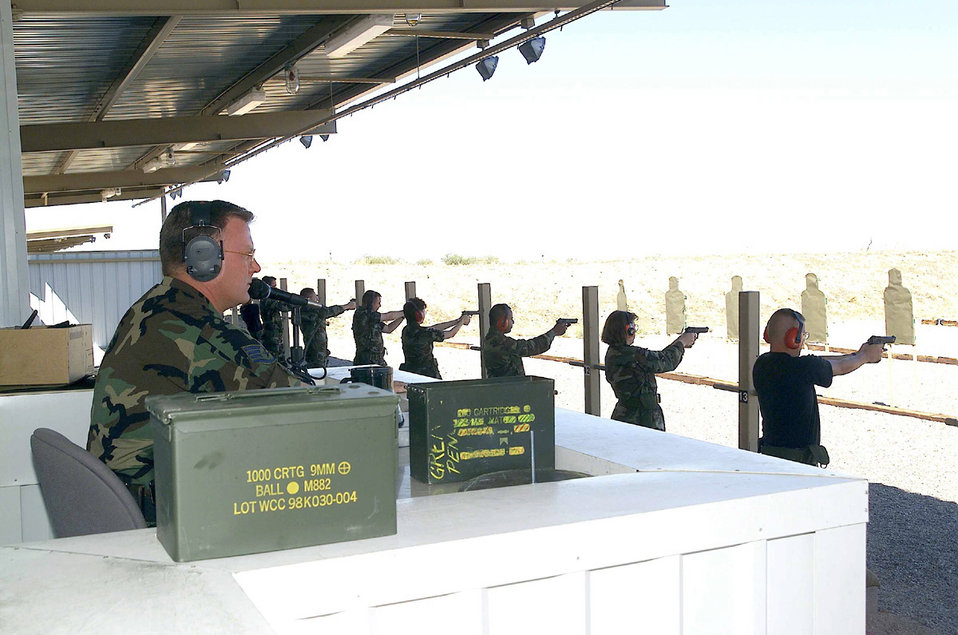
Range control

DAVIS-MONTHAN AIR FORCE BASE, Ariz. -- Staff Sgt. Merle Hudson, a combat arms instructor assigned to the 355th Security Forces Squadron here, performs range control duties as troops fire rounds on the small-arms range during qualification training for the 9mm pistol. They are receiving training in preparation for possible deployments supporting the U.S. military's response to recent terrorist attacks.